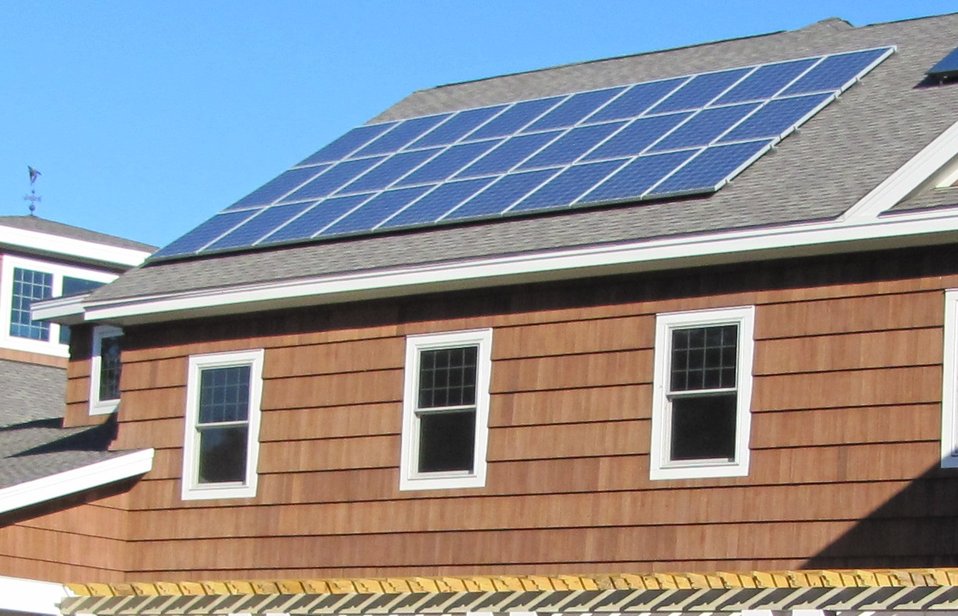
Solar panels at Long Island Visitor Center

Solar panels at the Long Island National Wildlife Refuge visitor center.